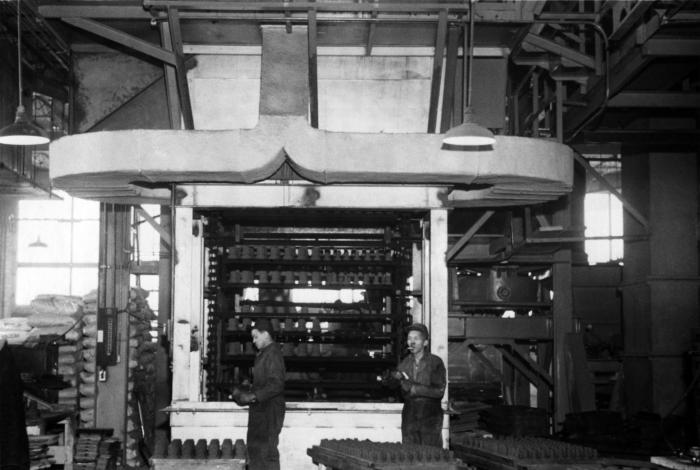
This historical photograph was provided by the Center for Disease Control's (CDC), National Institute for Occupational Safety and Health (NIOSH). The image depicted two African American foundry workers, who were not wearing respirators or goggles. Workers who don't wear the requisite protective garments, such as filtered breathing masks and gloves, can be exposed to dust particulates during many industrial processes. The dust itself can be a respiratory irritant, and carried by the dust, there are often toxic agents that can be the cause of irreparable respiratory damage including cancer, emphasema, and pleuritis.